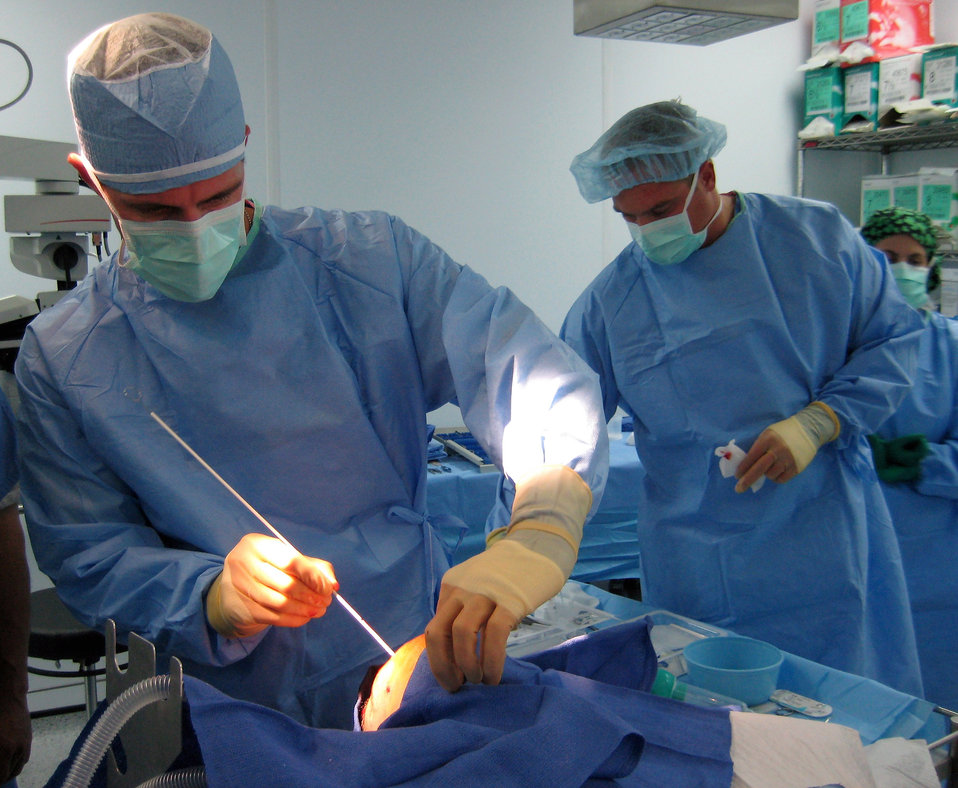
Lackland doctor leaves Afghan legacy

Lt. Col. (Dr.) Randall McCafferty (left) and surgical technician Tech. Sgt Andy Nobles perform surgery in October at the Craig Joint Theater Hospital on Bagram Air Base, Afghanistan. Dr. McCafferty established the first neurosurgery department at the Craig Joint Theater Hospital.